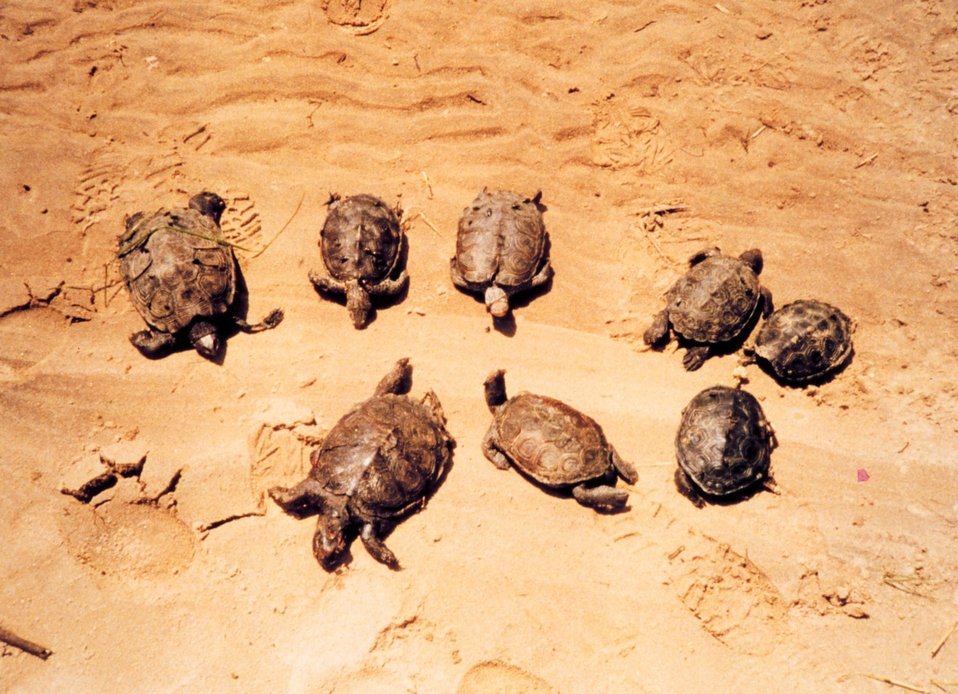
Mass mortality of young diamondback terrapins. Probably drowned in fish traps.